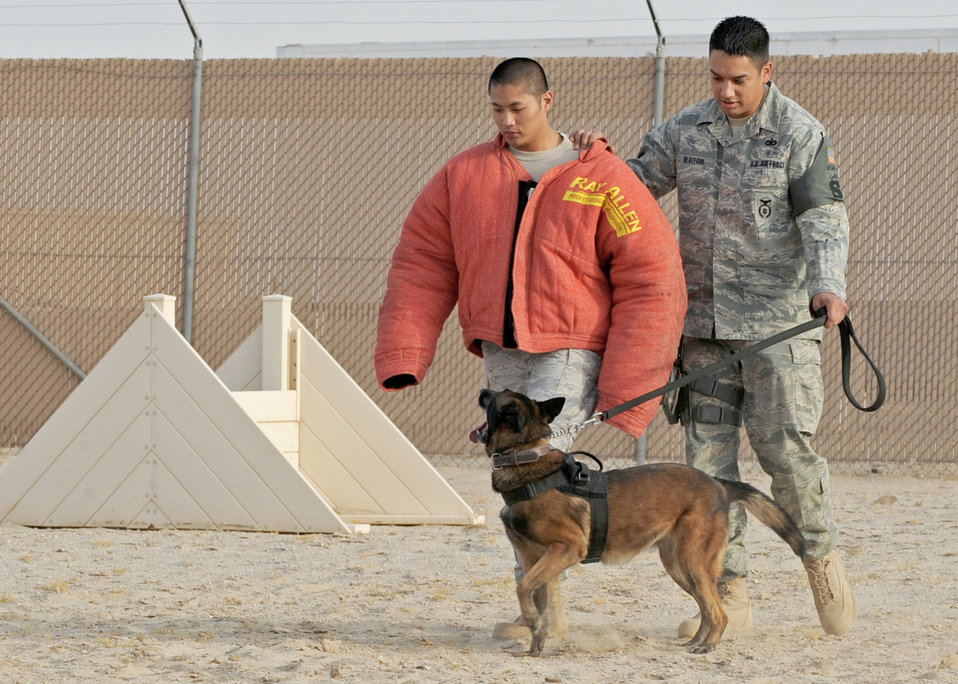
386 ESFS MWD

Staff Sgts. Lino Estacion (left) and Angelo Reategui (right) demonstrate the training of a military working dog July 21, 2010, in Southwest Asia. Each dog is trained to walk in front of its handler and watch for sudden movements. Sergeants Estacion and Reategui are dog handlers from the 386th Expeditionary Security Forces Squadron